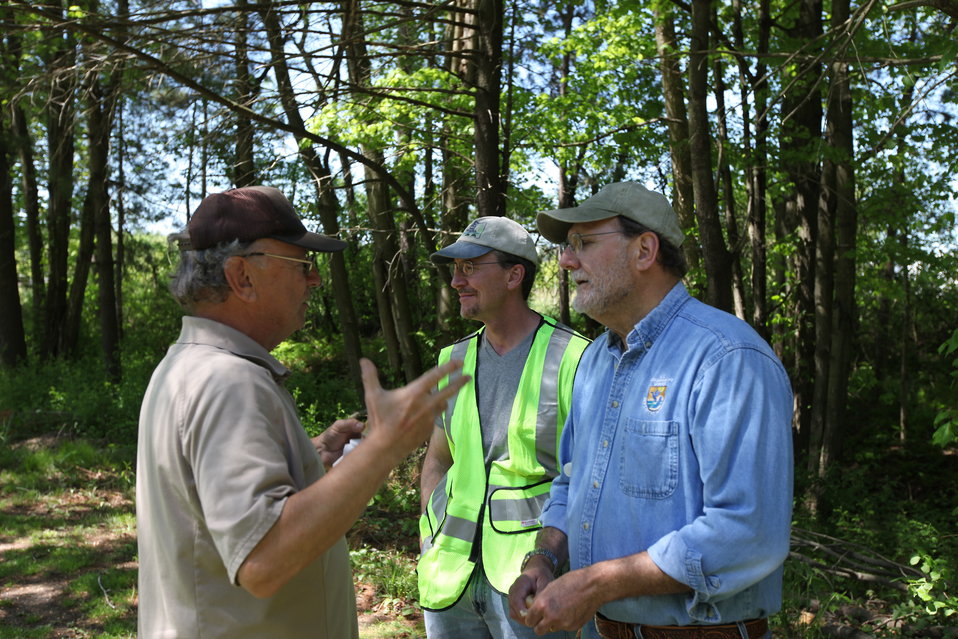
Youth Fishing Derby 2012

Megan Nagel/USFWS